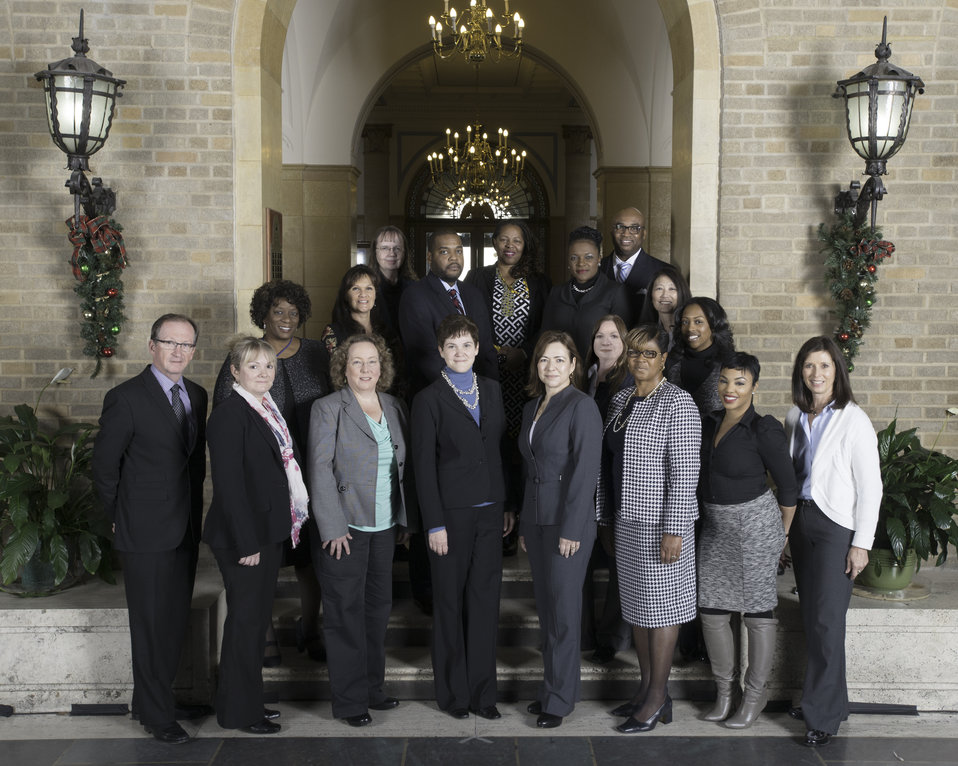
Agriculture Deputy Secretary Krysta Harden stands with the Cross-Cutting Training Team, Office of Human Resources Management (OHRM) from Washington, D.C. on the patio at the U.S. Department of Agriculture (USDA) in Washington, D.C. on Wednesday, Dec.11, 2013. The team received the Secretary's Honor Award for furthering USDA as an inclusive, high-performance organization by driving cross-agency collaboration through training to improve outreach and customer service.